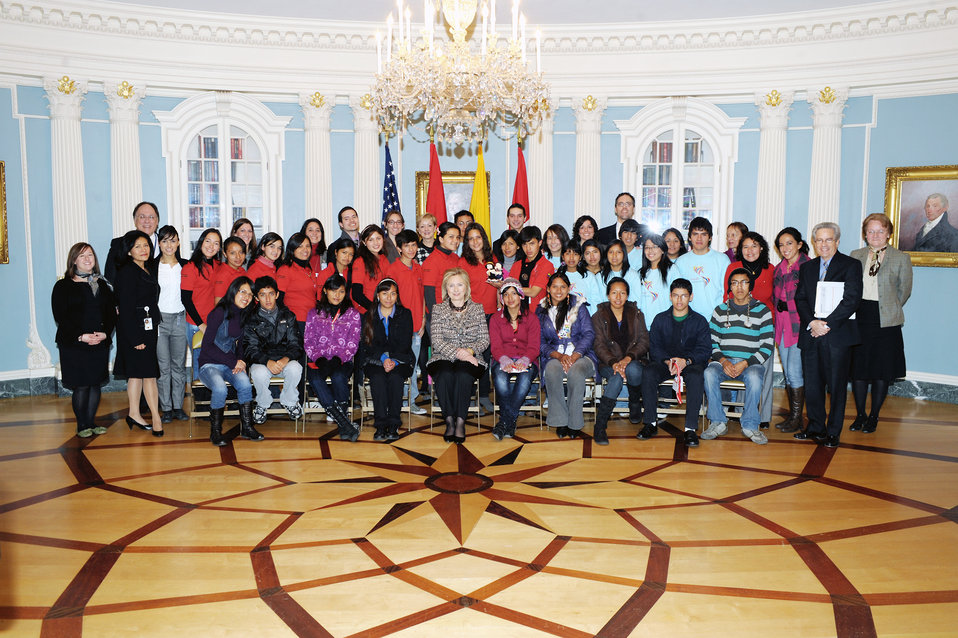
Secretary Clinton Meets With Bolivian, Ecuadorian, and Peruvian Youth Ambassadors

U.S. Secretary of State Hillary Rodahm Clinton meets with students and teachers from Bolivia, Ecuador, and Peru, who are participating in the Bureau of Educational and Cultural Affairs Youth Ambassadors program at the U.S. Department of State in Washington, D.C., on March 4, 2011.